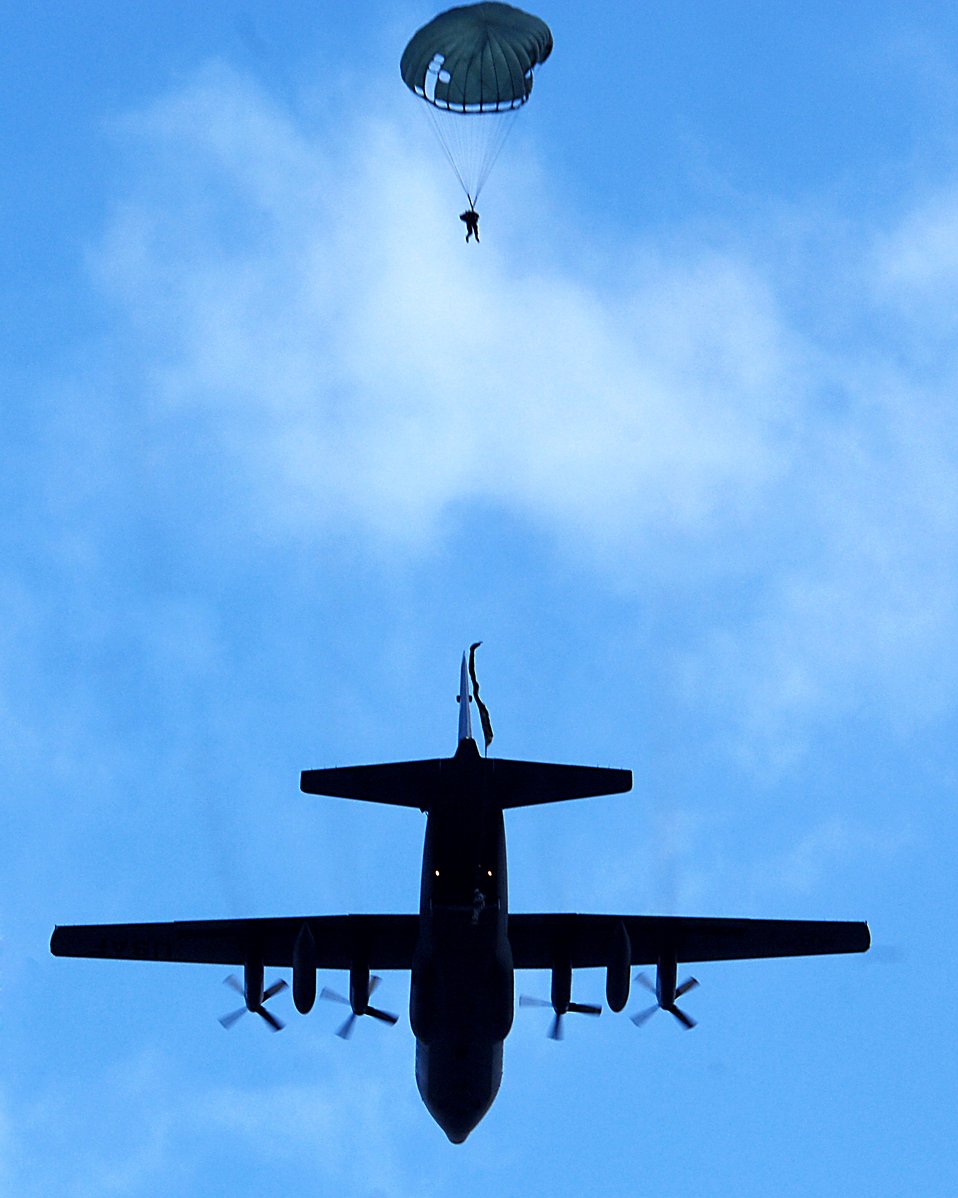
Airborne over Deutschland

Airmen with the 786th Security Forces Ravens from Sembach Annex, Germany and Soldiers from the 5th Quarter Master Arial Delivery crew execute an airborne jump exercise March 8 over southwestern Germany.